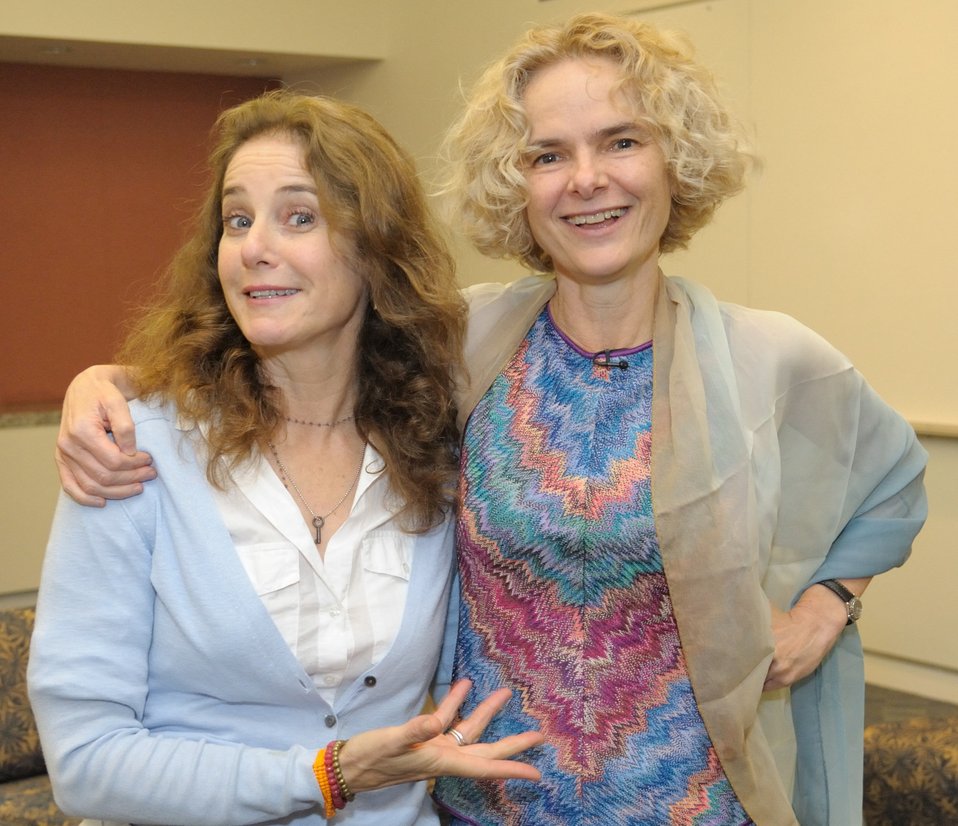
3-Winger and Volkow

Actress Debra Winger and NIDA Director Dr. Nora Volkow pose prior to NIDA’s Addiction Performance Project, held Aug 5, 2011 on the NIH Campus